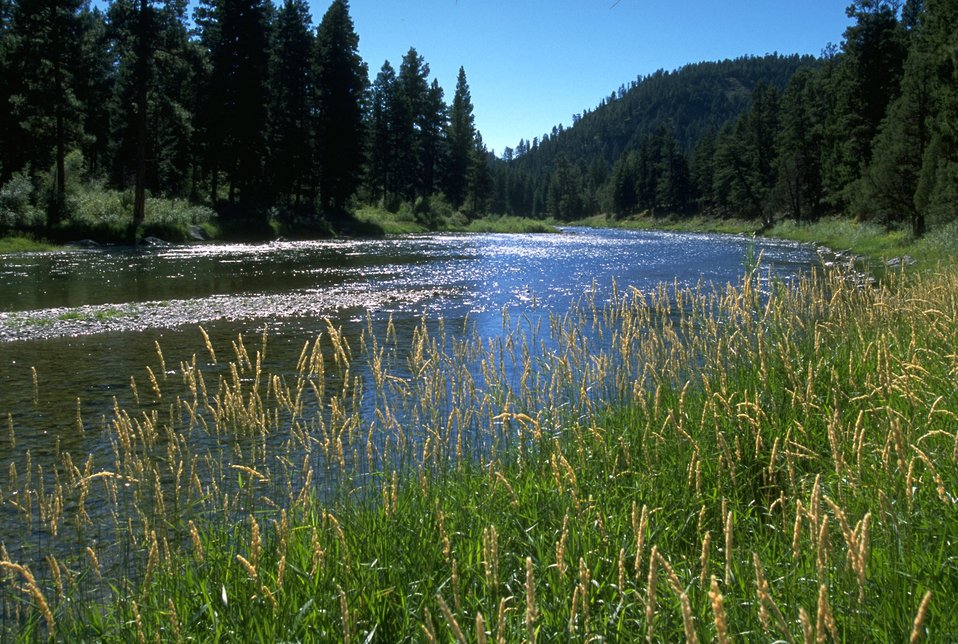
Scenic shot of Blackfoot River